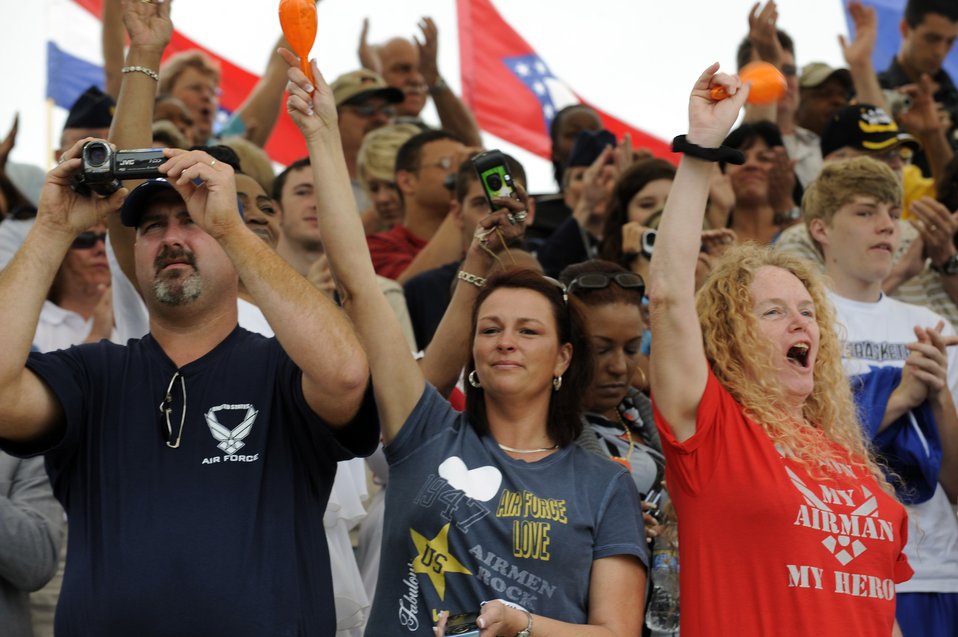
From basic trainee to Airman

Family members yell and cheer as basic trainee graduate April 24 at Lackland Air Force Base, Texas.